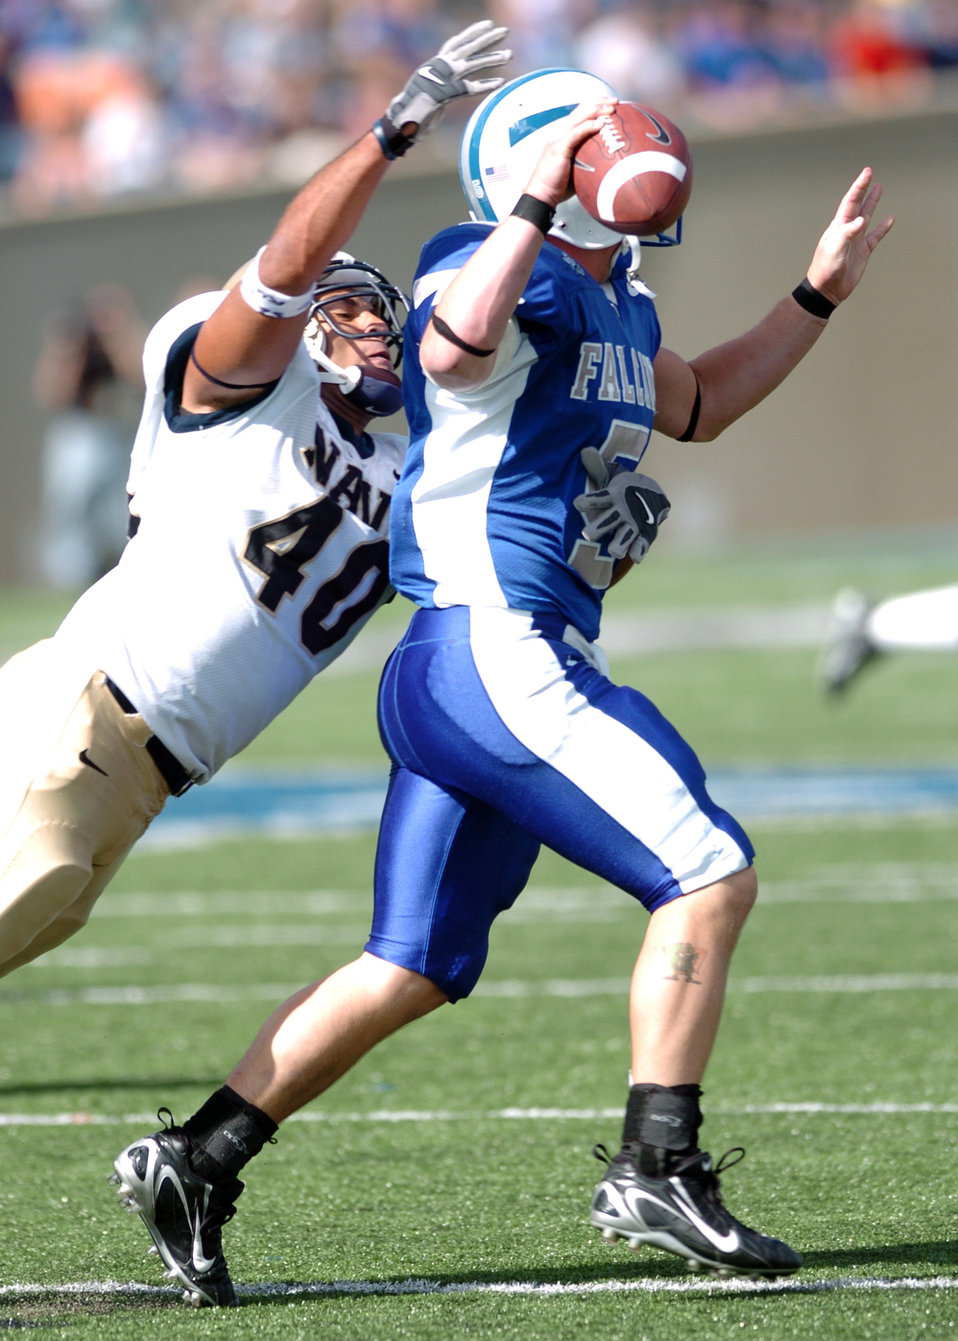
Navy takeaway

Navy outside linebacker David Mahoney knocks the ball from Air Force quarterback Shaun Carney’s hand Saturday in a third-quarter sack. Mahoney led Navy with 3 sacks on the day for 12 yards. Navy won, 24-17